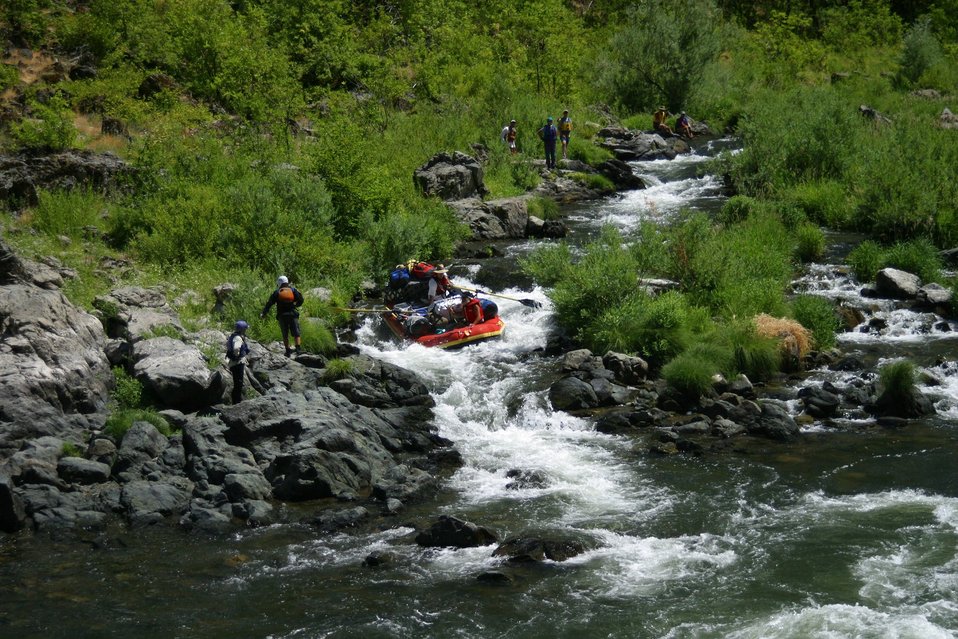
Rainie Falls Fish Ladder